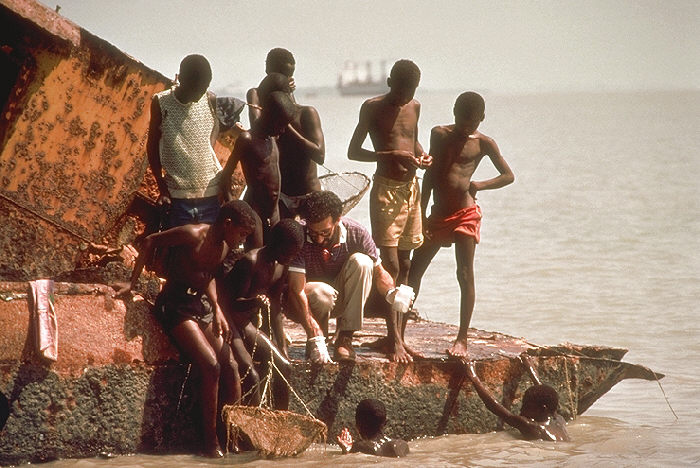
EIS officer with African children.